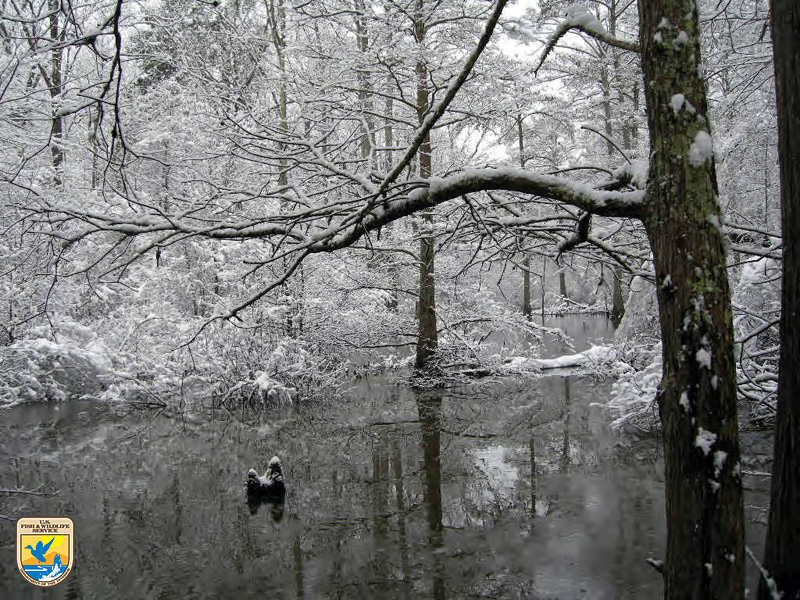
Little River Refuge

Little River National Wildlife Refuge, OK.